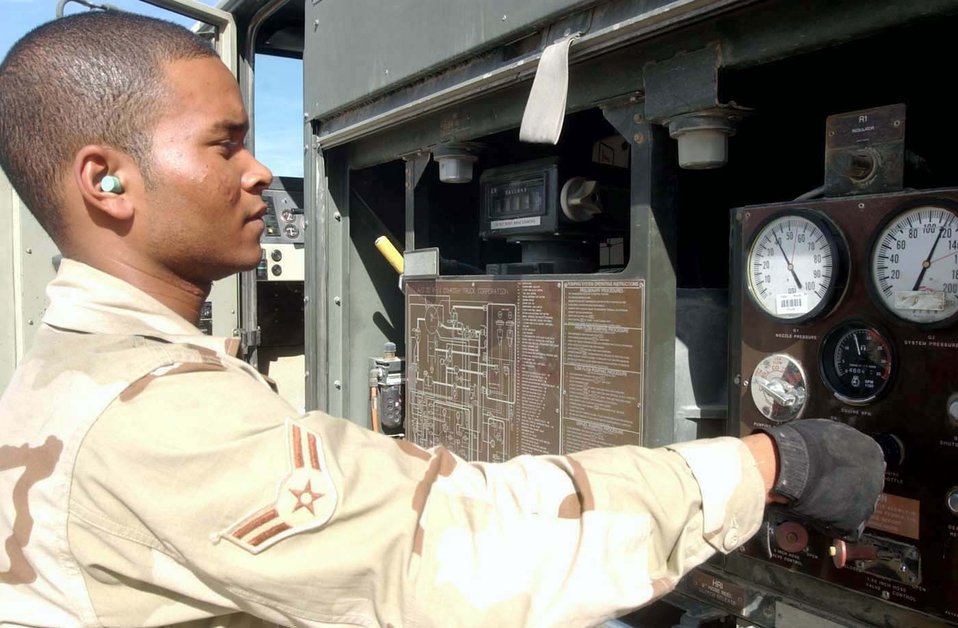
Making adjustments

BAGRAM AIR BASE, Afghanistan -- Airman 1st Class Omar Foster adjusts the throttle on an R-11 refueling vehicle. The R-11 can pump up to 600 gallons of jet fuel per minute. Airman Foster is a fuels technician in the 455th Expeditionary Operations Group, and he is deployed from Hurlburt Field, Fla.